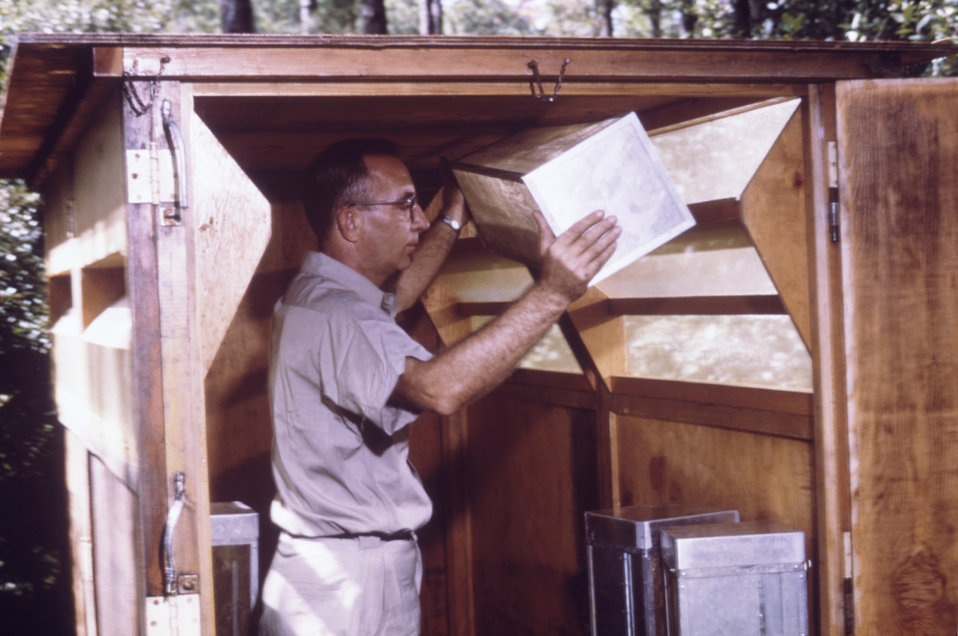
This CDC field researcher is removing a mosquito cage from a horse stable mosquito trap.